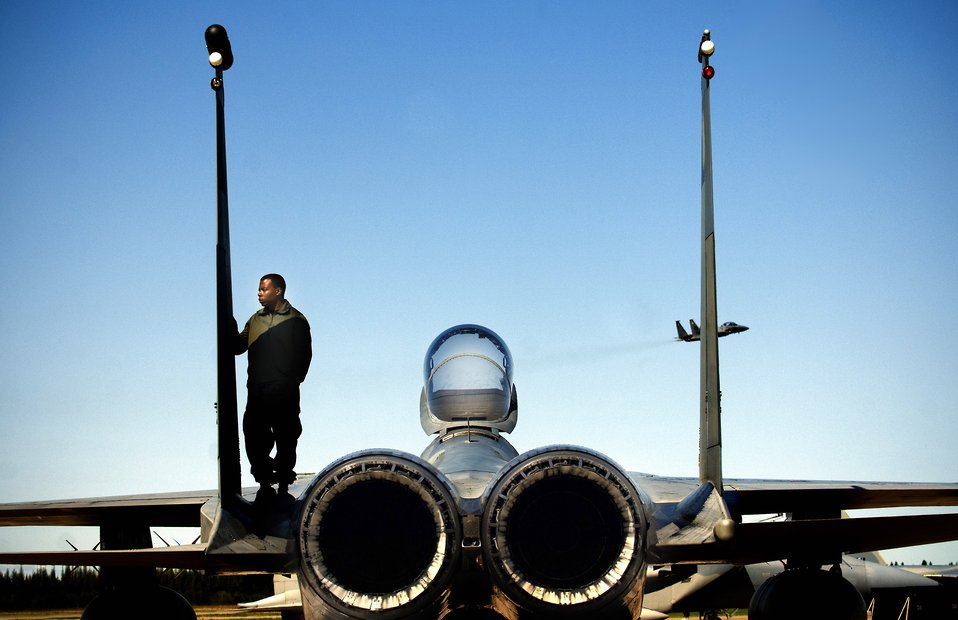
Looking good

Staff Sgt. Chester Johnson, performs a post flight inspection on an F-15C Eagle from Eglin Air Force Base, Fla., during Maple Flag at Canadian Forces Base Cold Lake, Alberta, Canada. Maple Flag is a four-week international air combat exercise held annually.